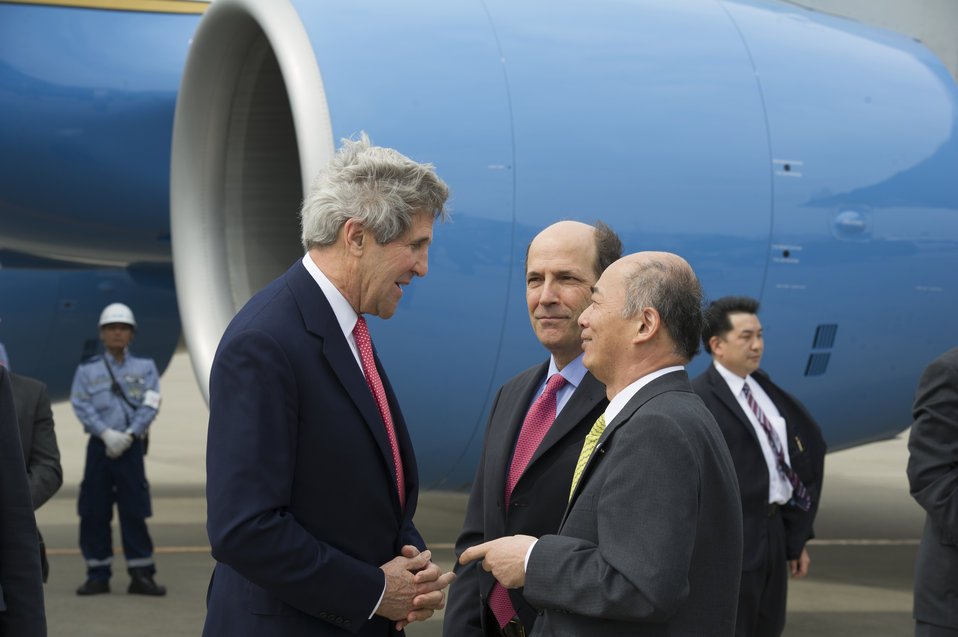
Secretary Kerry Is Welcomed in Japan

U.S. Secretary of State John Kerry is greeted by U.S. Ambassador to Japan John V. Roos and Japanese Ambassador to the United States Kenichiro Sasae upon his arrival to Tokyo, Japan, on April 14, 2013.